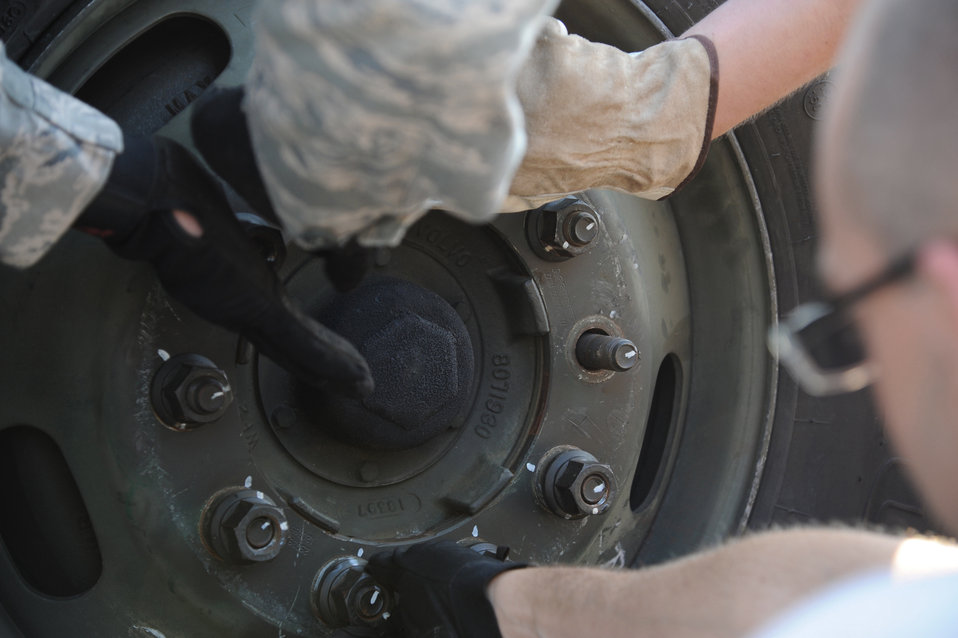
Weapons load competition

Fuels technicians from the 4th Logistics Readiness Squadron add lug nuts to a refueling truck tire after maneuvering the tire through an obstacle course May 25, 2011, during a tire change challenge as part of a weapons load competition at Seymour Johnson Air Force Base, N.C.